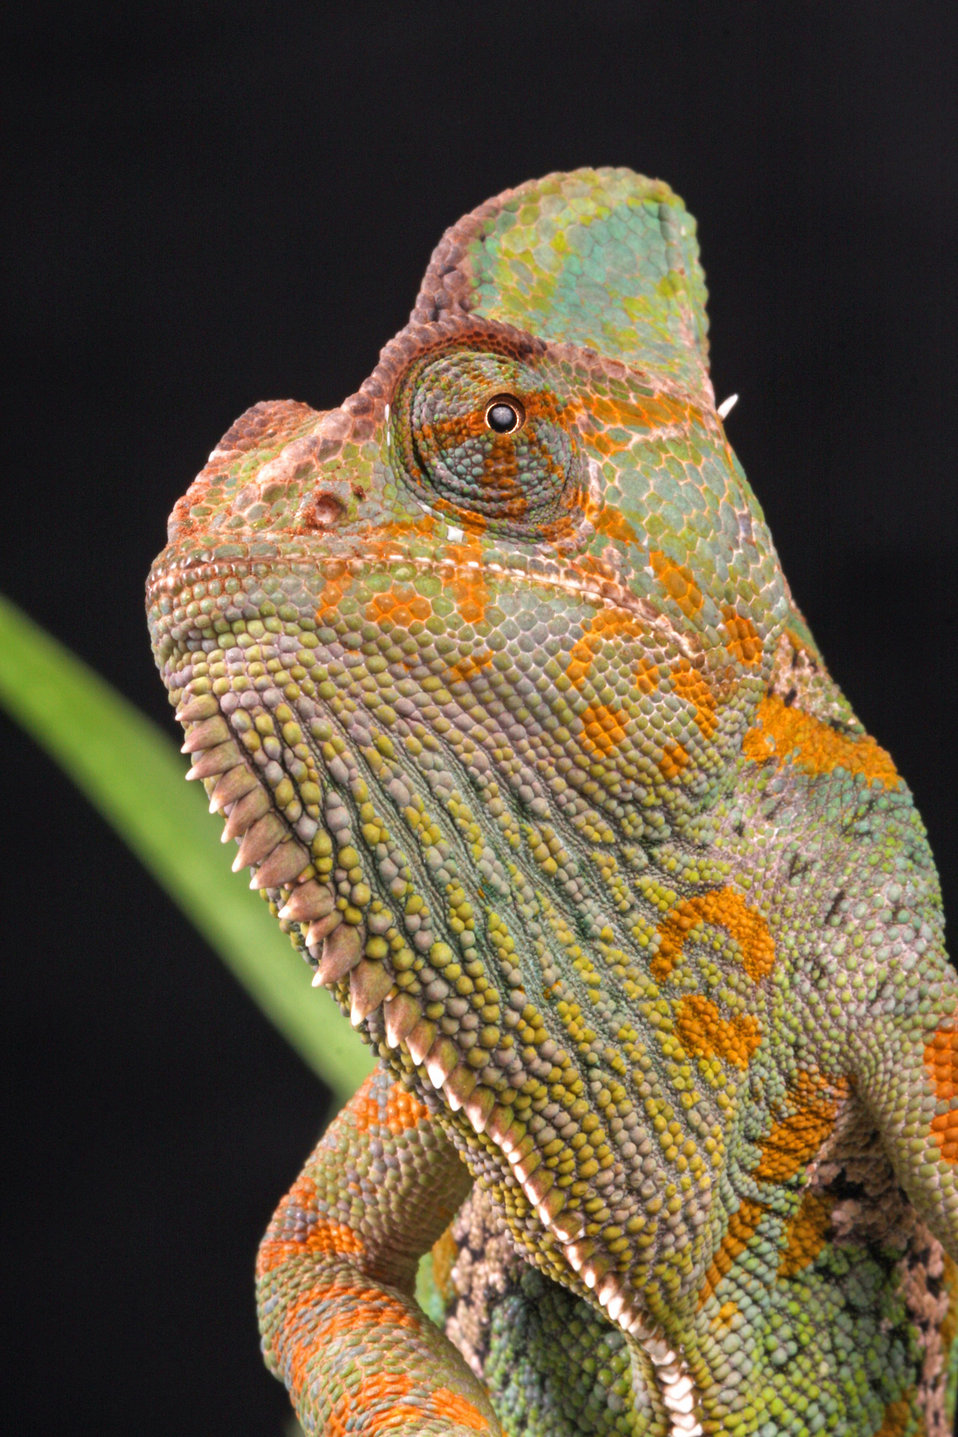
Chameleon

Close-up macro of a veiled chameleon.